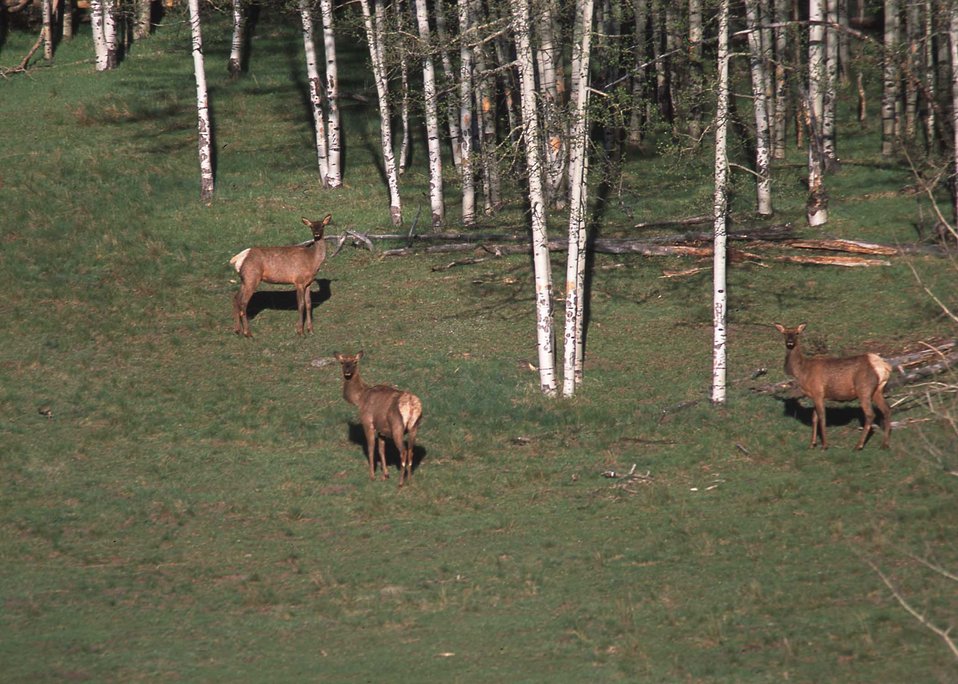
Elk migrating to higher elevations in spring on an elk ranch in northern New Mexico.